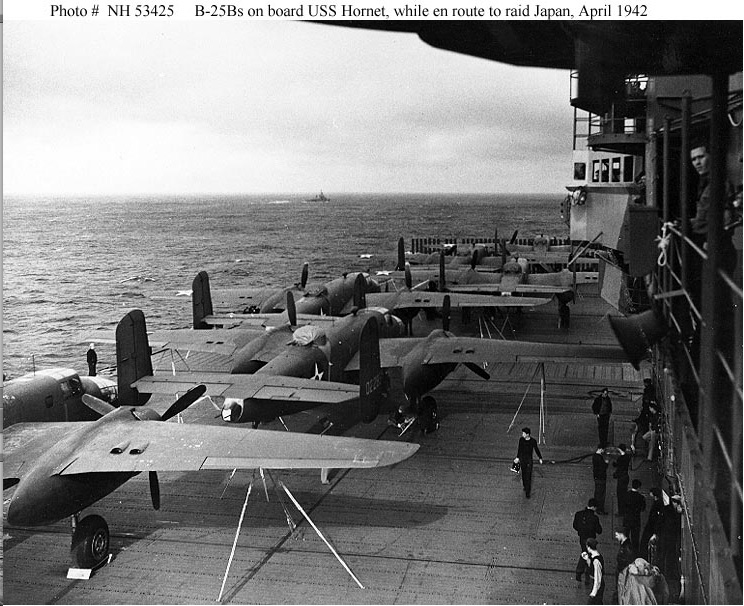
Doolittle Raid

U.S. Army Air Forces B-25B bombers tied down on the flight deck of USS Hornet (CV-8), while the carrier was en route to the mission's launching point. The plane in the center is tail No. 40-2283 and mission plane # 5. Capt. David M. Jones piloted the aircraft to targets in the Tokyo area.